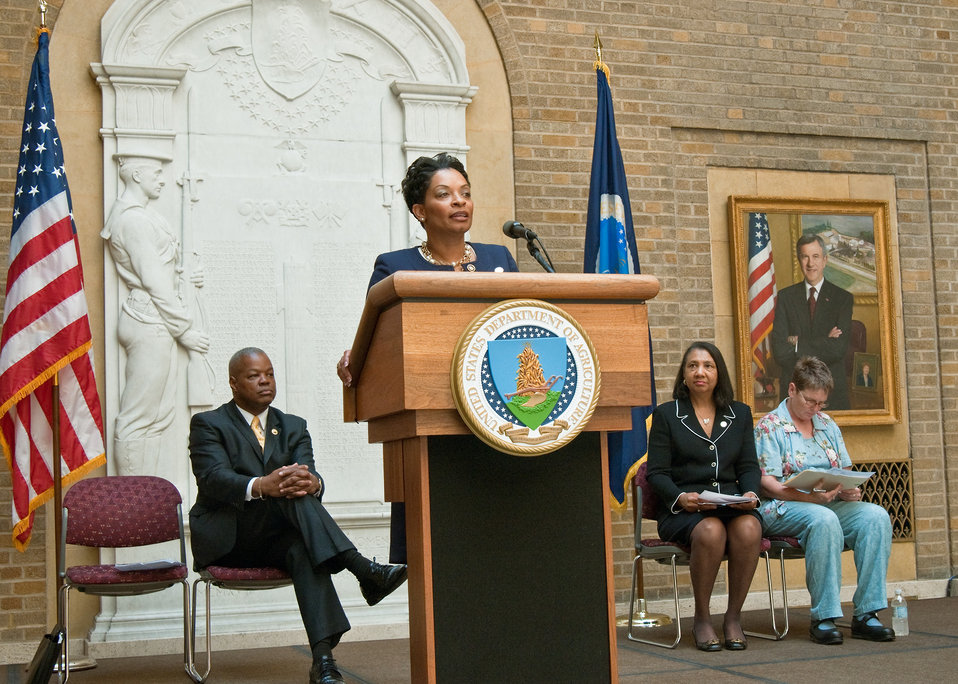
US Department of Agriculture Director Planning, Coordination and Accountability Management Services Telora Dean, addresses the Departmental Management Interns Tuesday, June 8, 2010. Other speakers from left are Charles McClam, Deputy Chief Information Officer, Alma Hobbs, Deputy Assistant Secretary for Administration and Robin Heard, Deputy Assistant Secretary for Administration. The event took place at the US Department of Agriculture in Washington, DC. USDA Photo 10di1393-3.